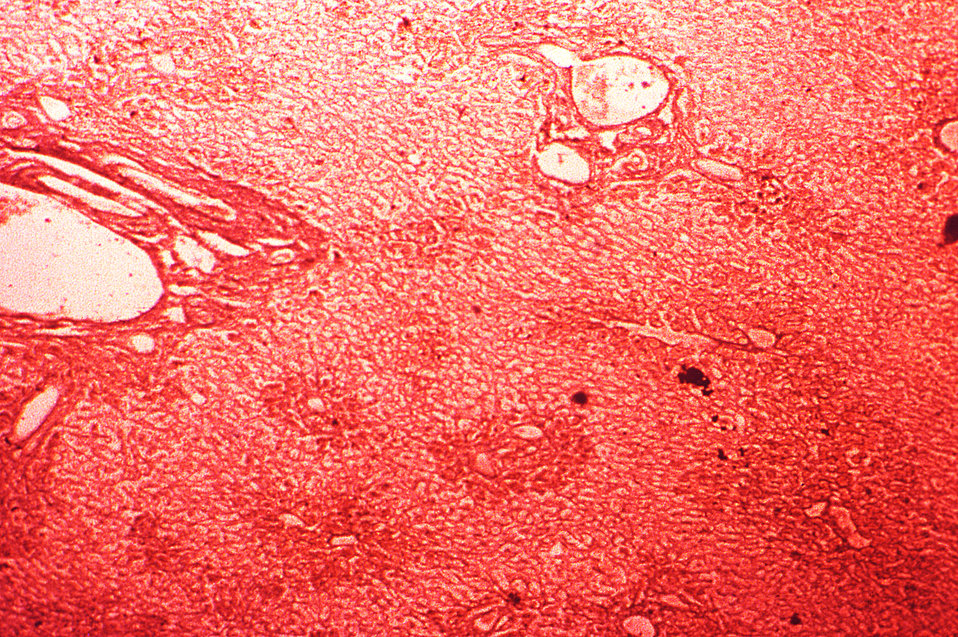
Under a low magnification of 40X, this Wilder's Reticulin-stained photomicrograph depicts the cytoarchitectural changes found in a liver tissue specimen extracted from a deceased yellow fever patient. This particular view highlights the parenchymal disorganization, which is the predominant finding within the mid-zone of this lobule, though there is a conservation of the lobule's reticular fibers. See PHIL 2176, and 8239, depicting TEMs of the yellow fever virus.